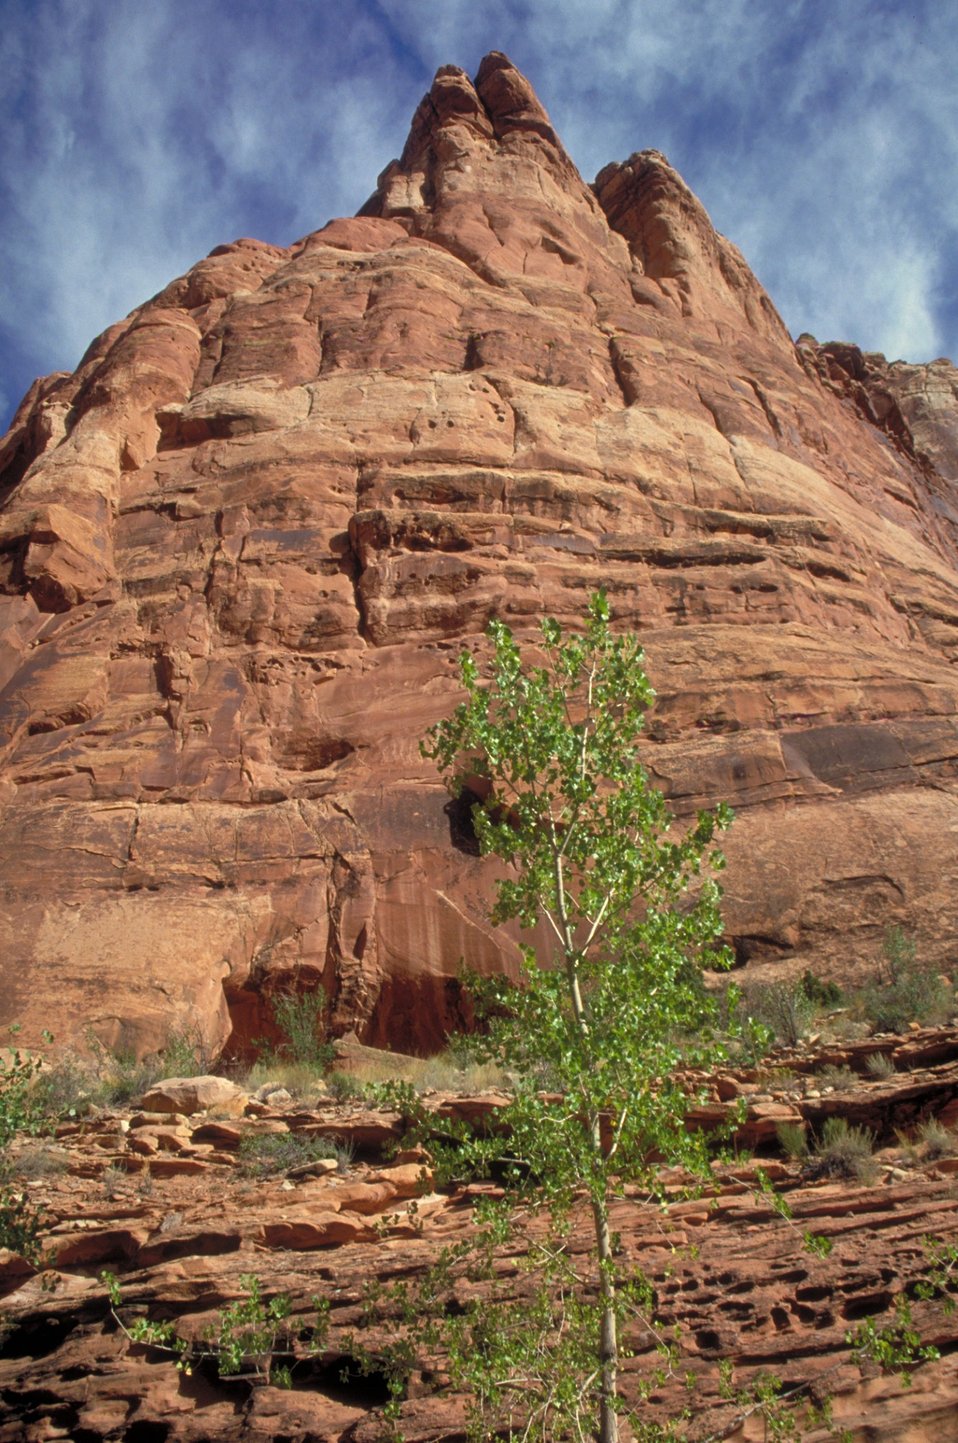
Black Dragon Wash near Green River, Utah.